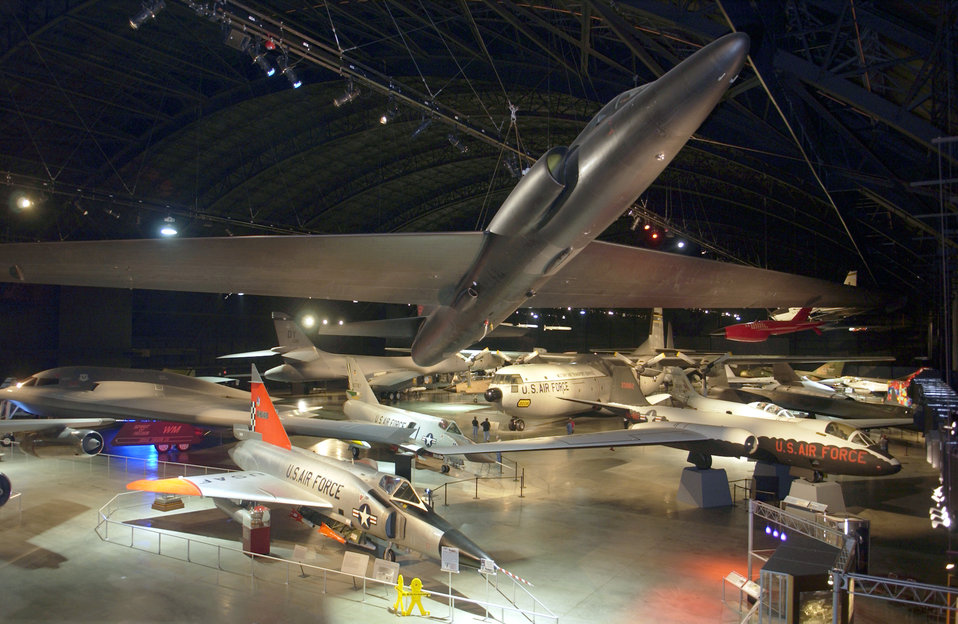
AF Museum opens new exhibit

DAYTON, Ohio -- The National Museum of the United States Air Force has a wide variety of aircraft and equipment on display. The newest addition to the museum is the